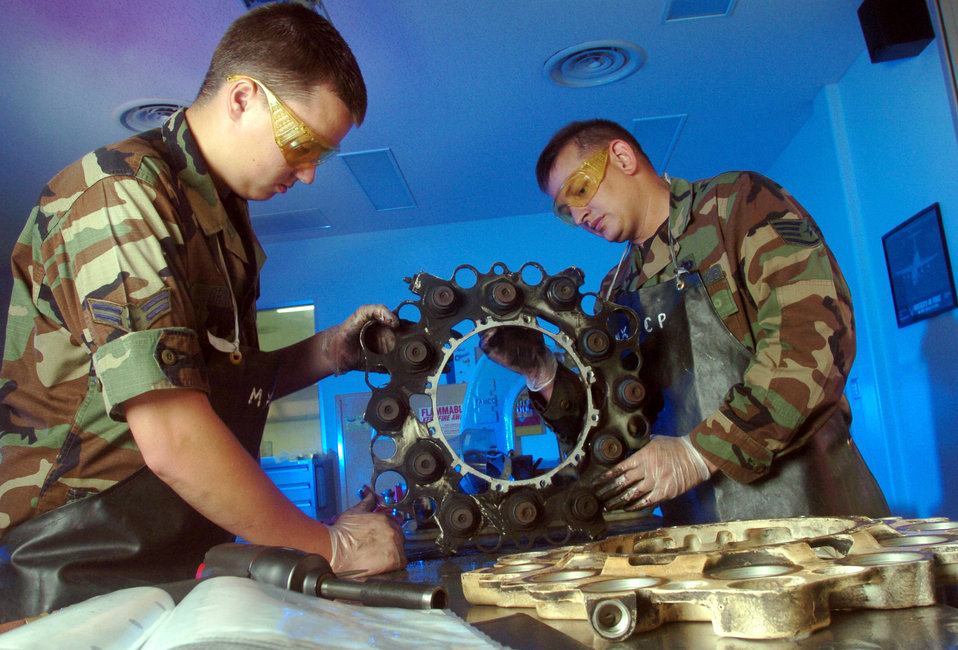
Gimme a brake

YOKOTA AIR BASE, Japan -- Airman 1st Class Christopher Griep (left) and Staff Sgt. James Christner disassemble a C-130 Hercules aircraft brake assembly carrier during an inspection here. The Airmen of the 374th Maintenance Squadron's pneudraulics element overhaul, modify and test all pneudraulics components of C-130s assigned and in-transit here.